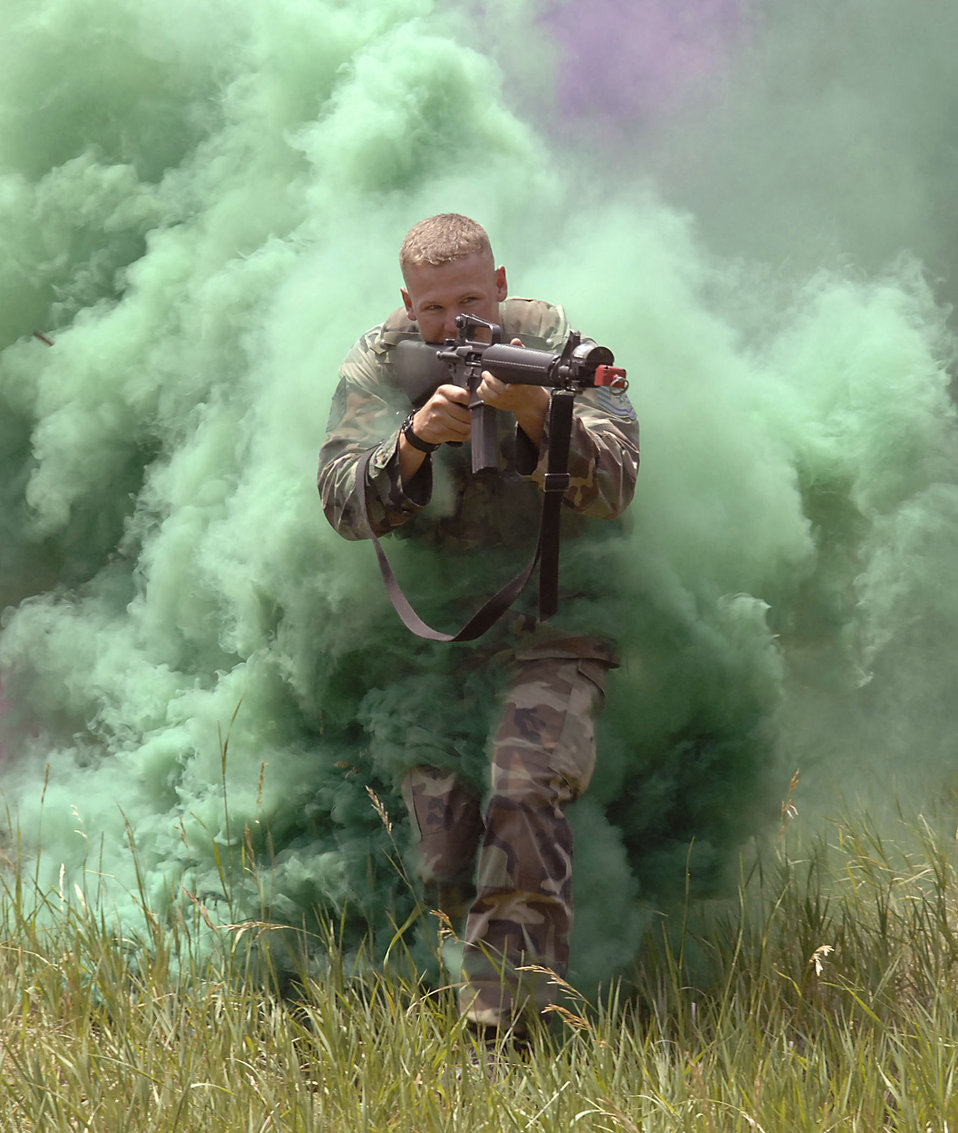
Here I come

Tech. Sgt. Kevin Akers runs through cover smoke while